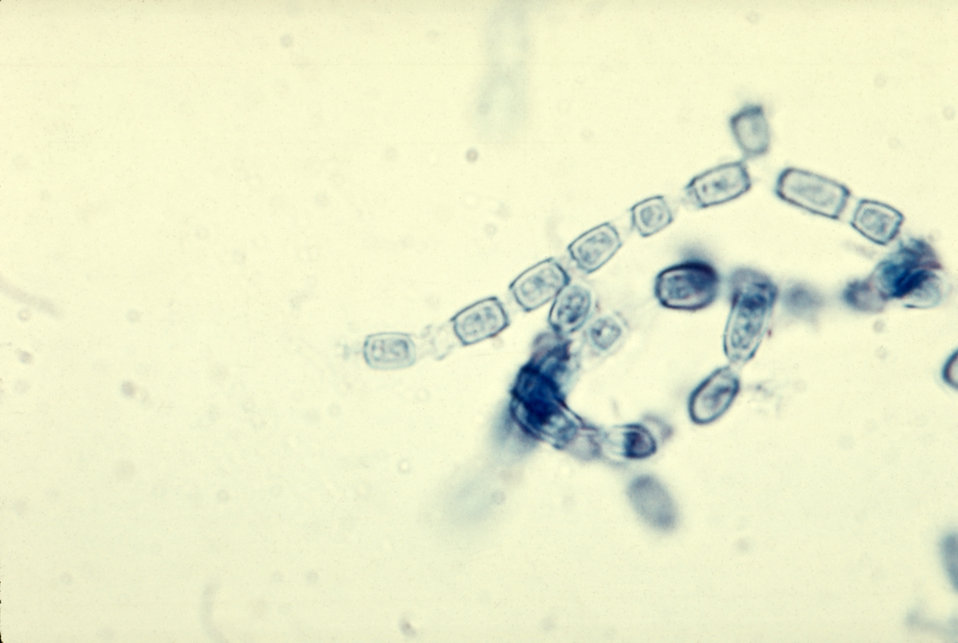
Arthroconidia of Coccidioides immitis